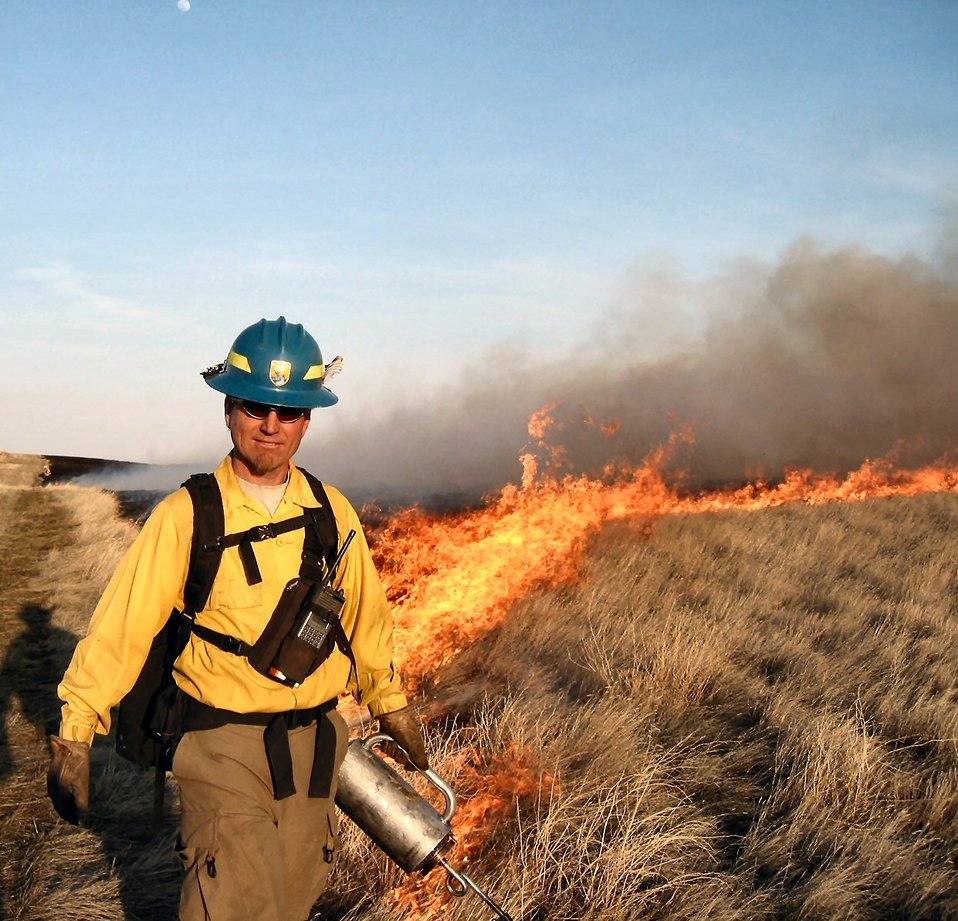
Fire Careers

From seasonal fire jobs to full time positions as a Prescribed Fire Specialist or Fire Management Officer, there are many ways to make fire a career.